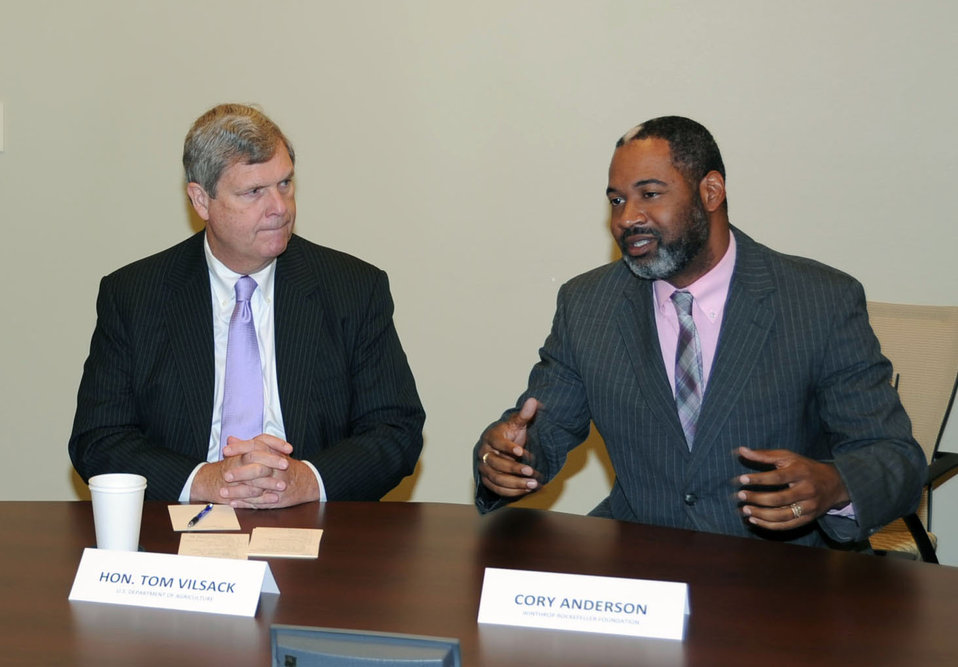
Agriculture Secretary Tom Vilsack listens to Cory S. Anderson, Vice President of the Winthrop Rockefeller Foundation, a business leader at a roundtable discussion held at the Winthrop Rockefeller Foundation offices in Little Rock, AR on Wednesday, Oct. 30, 2013.